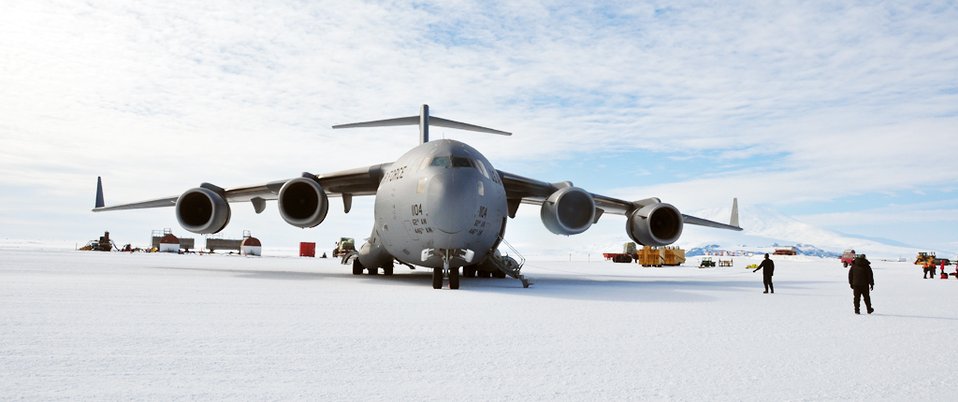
It's free-zing

Airmen from McChord Air Force Base, Wash, conduct an Operation Deep Freeze mission at Pegasus ice runway near McMurdo Station, Antarctica. Through this operation, Defense Department servicemembers provide logistical support to research activities in Antarctica.